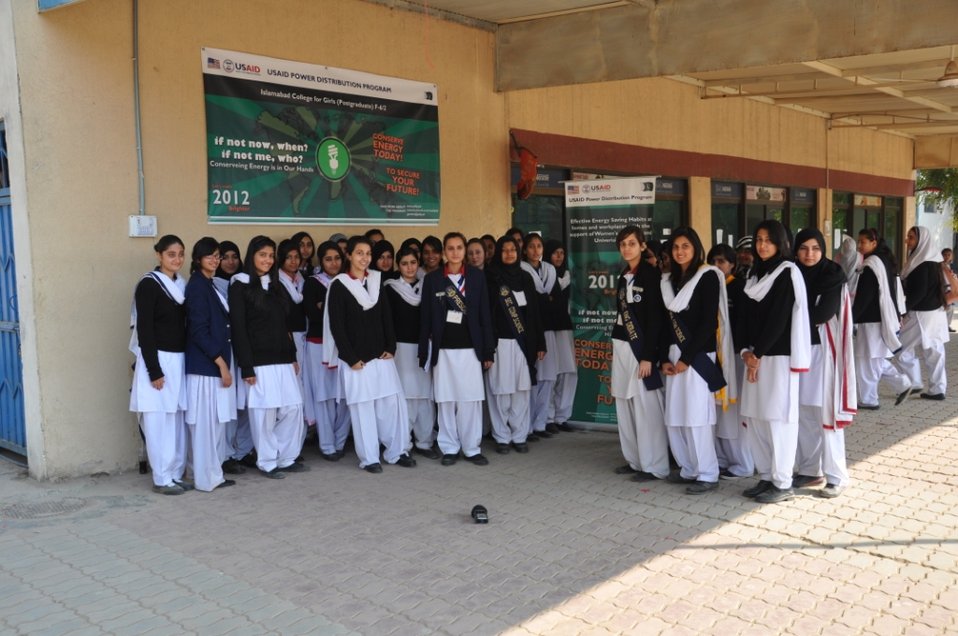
Effective Energy Saving Habits Campaign

Islamabad, December 29, 2011 - the USAID Power Distribution Program, under its Gender Strategy, held an informative talk at Islamabad College for Girls, F-6/2, with the support of female representatives from IESCO. The agenda of the talk was to:
• Inform students about the USAID Power Distribution Program and the role of Distribution companies in Pakistan.
• Educate students and teachers about the effective energy saving methods they can apply at homes, schools and workplaces.
• Enlighten female students about their workplace rights and inform them about various employment opportunities in the power sector.